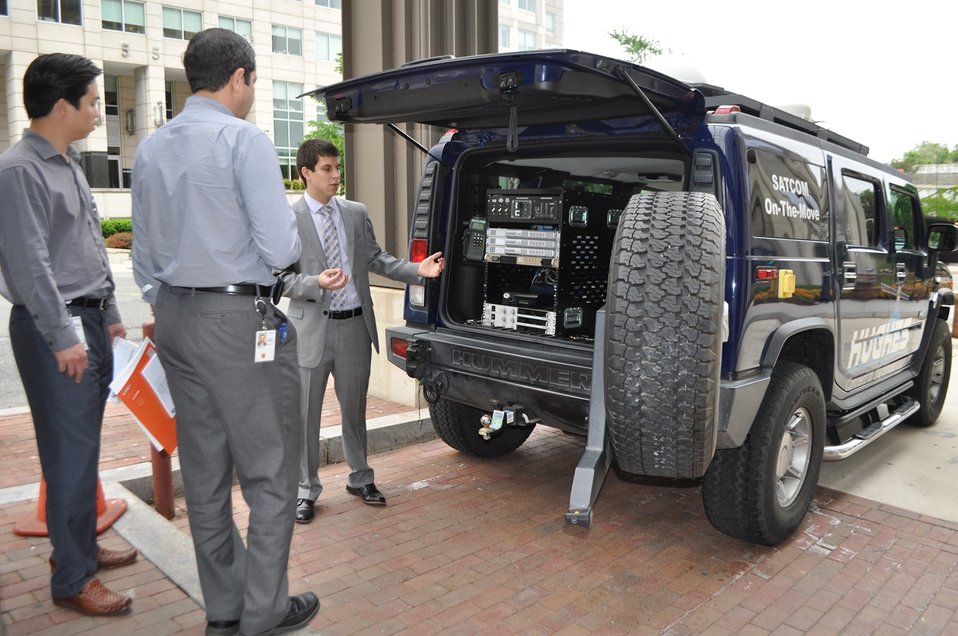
5.14.2014 Satellite Technology Demonstration

Satellite Technology Demonstration at FCC